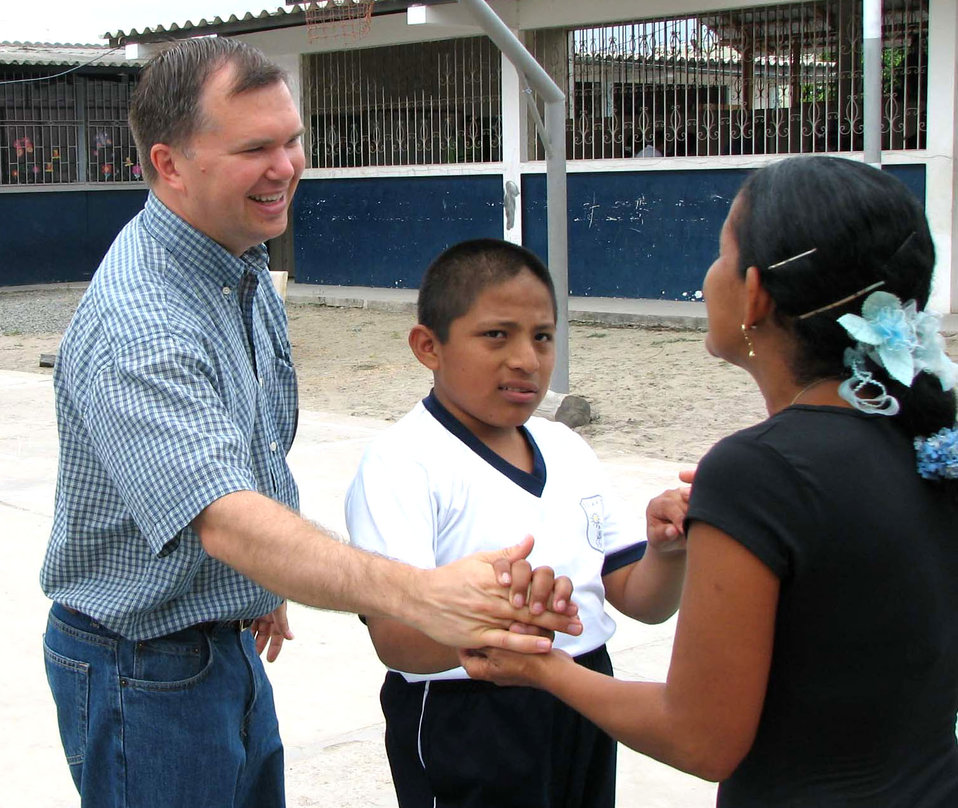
Location sings praises of first assigned chaplain's team

Chaplain (Capt.) Jeff Granger volunteers at the Angelica Flores School for the Handicapped in Manta, Ecuador. The chaplain, assigned to Manta Forward Operating Location, provides community relations in Manta and surrounding areas as part of his duties.